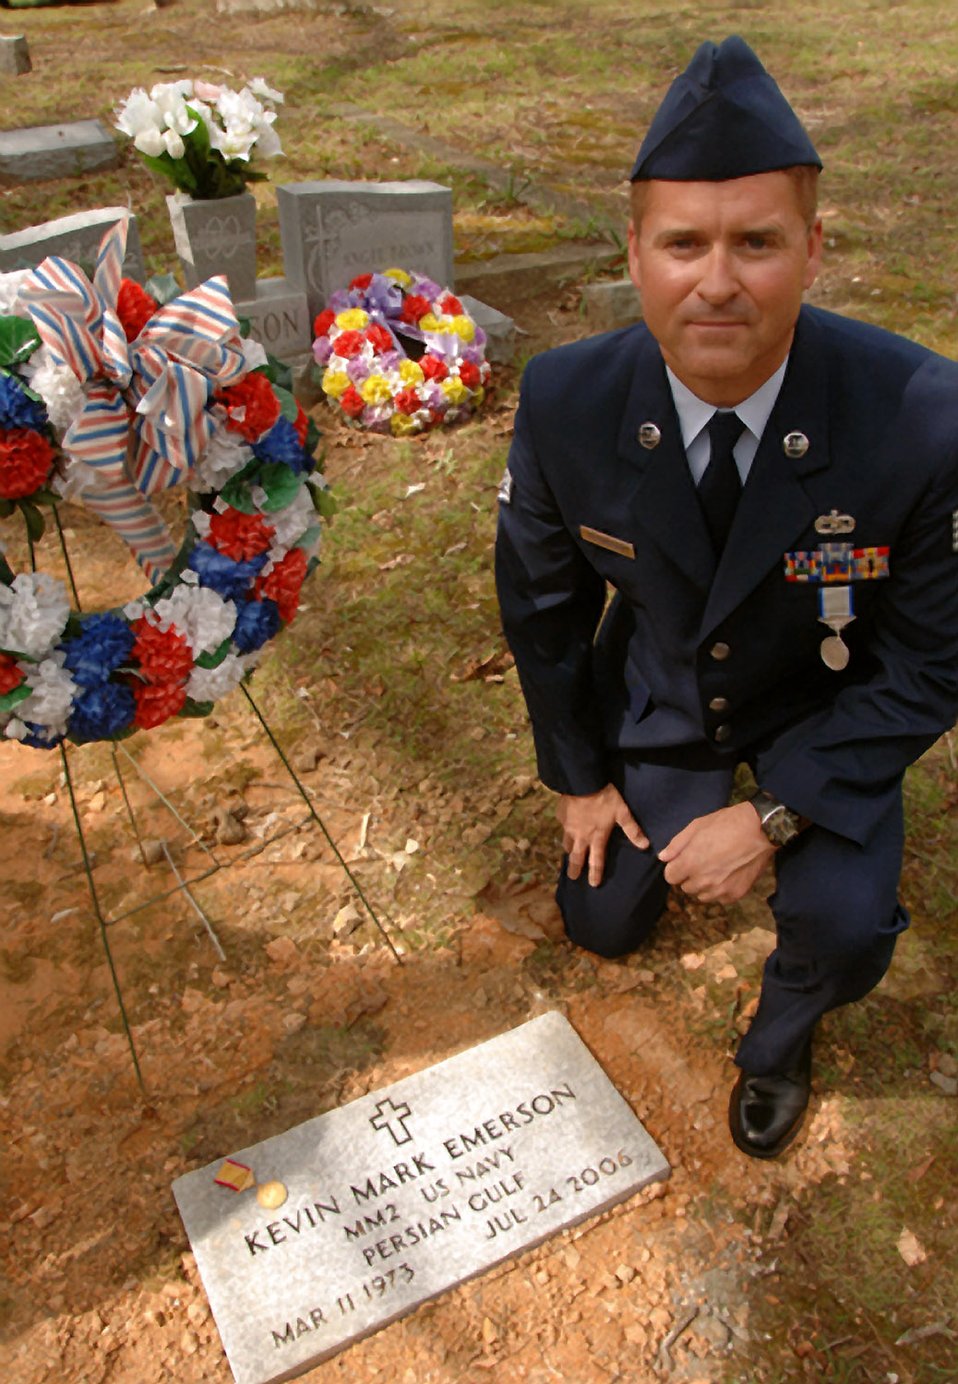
Coast Guard awards Gold and Silver Lifesaving Medals for heroic actions

Staff Sgt. John M. Rosenberry Sr. poses alongside the gravesite of his friend Kevin Mark Emerson in Jetersville, Va., April 11. Sergeant Rosenberry was awarded the Coast Guard Silver Lifesaving medal, and Emerson was posthumously awarded the Gold Lifesaving Medal for the heroic rescue of two young boys caught in a riptide while vacationing in the Outer Banks of North Carolina in July 2006. Mr. Emerson died as a result of his heroic actions.